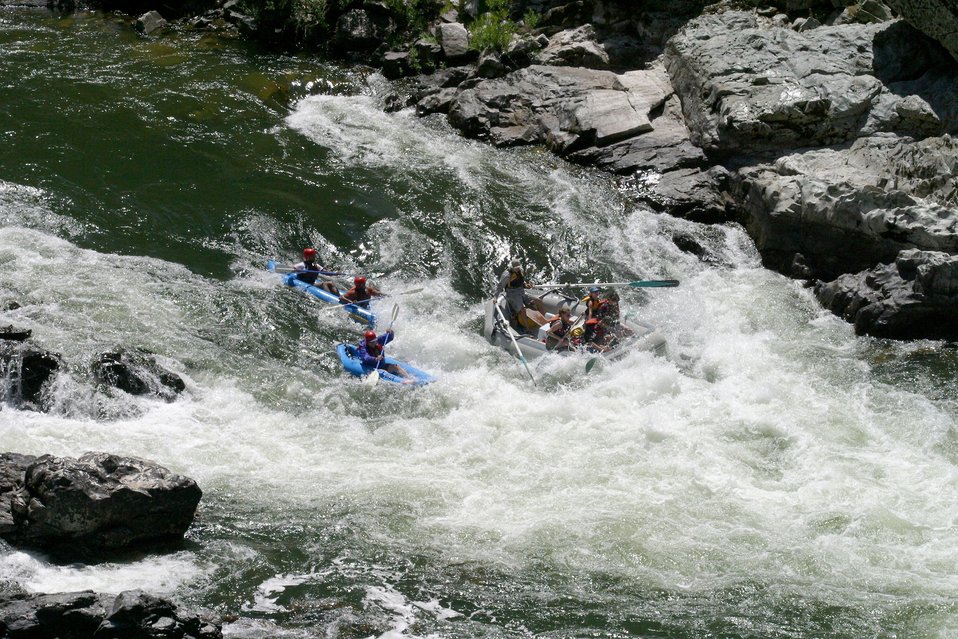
Boater at Grave Creek Falls